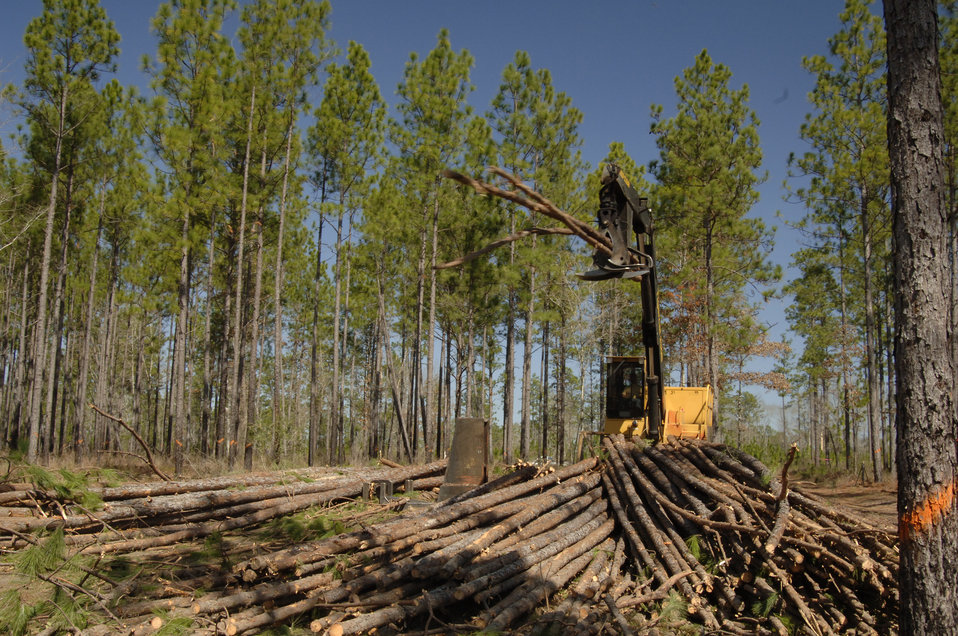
The U.S. Department of Agriculture (USDA) Forest Service (FS) is strongly committed to the management of the National Forests in an environmentally sound manner. The agency's top priority is to maintain and improve the health, diversity, and productivity of forest ecosystems for the enjoyment of current and future generations. Forest management includes guidance, administration, and support of the agency's forest products management and sales programs. Forest products include materials derived from a forest for commercial use such as lumber and paper, and also 'special forest products' such as medicinal herbs, fungi, edible fruits and nuts, and other natural products.